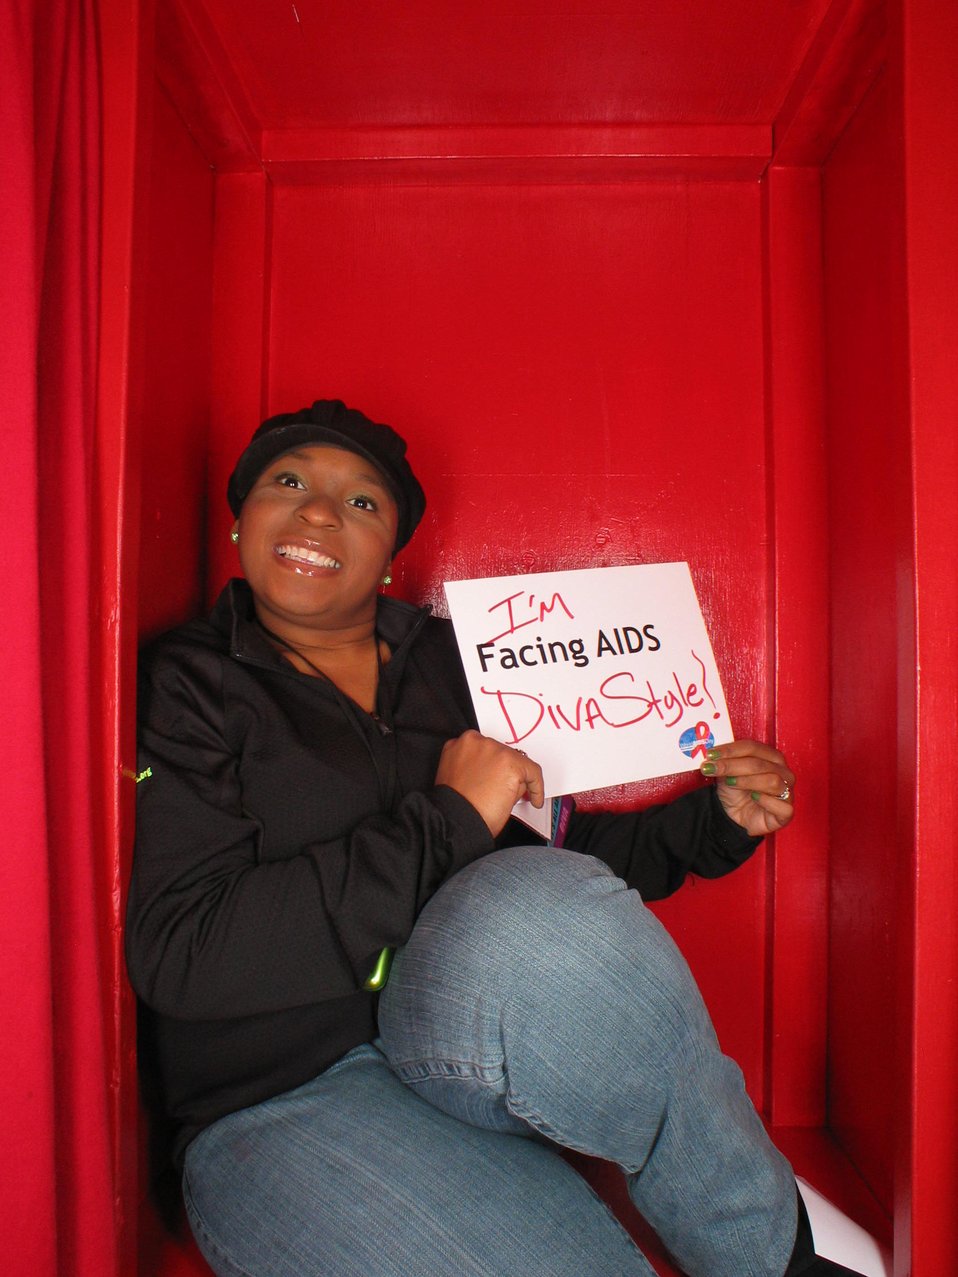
I'm Facing AIDS Diva Style!